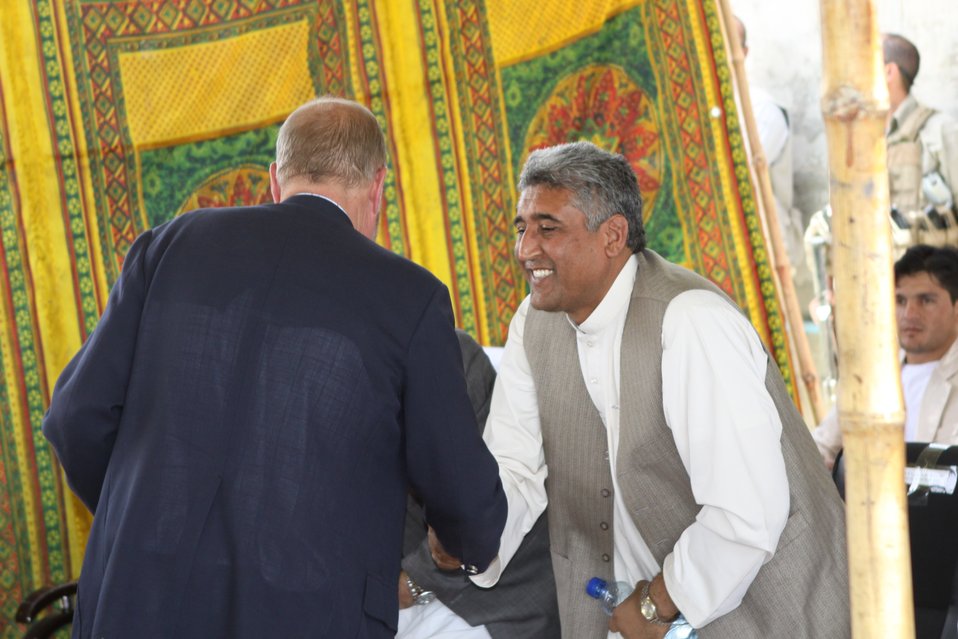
Bolan Poultry Farm